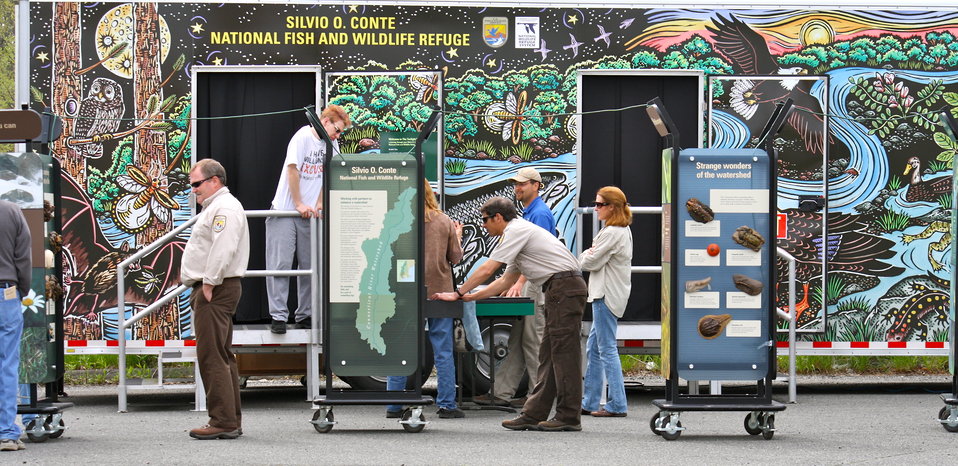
Watershed on Wheels

Silvio O. Conte National Fish & Wildlife Refuge hosted a traveling refuge on wheels at the fishing derby held at the USFWS Northeast Regional Office in Hadley, MA.